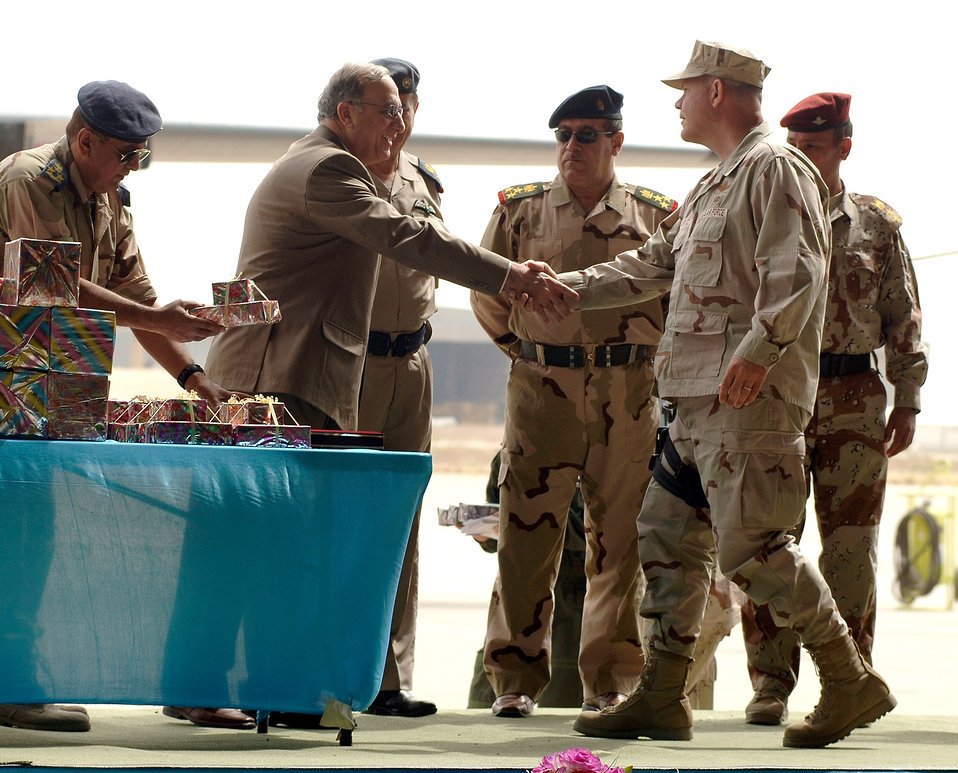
Iraqi air force celebrates 76th anniversary

Iraqi Minister of Defense Abd al-Qadir al-Mufriji presents Col. Mark Schmitz with a gift April 22 during the celebration of the 76th anniversary of the Iraqi air force at the New Al Muthana Air Base Air Base in Baghdad, Iraq.